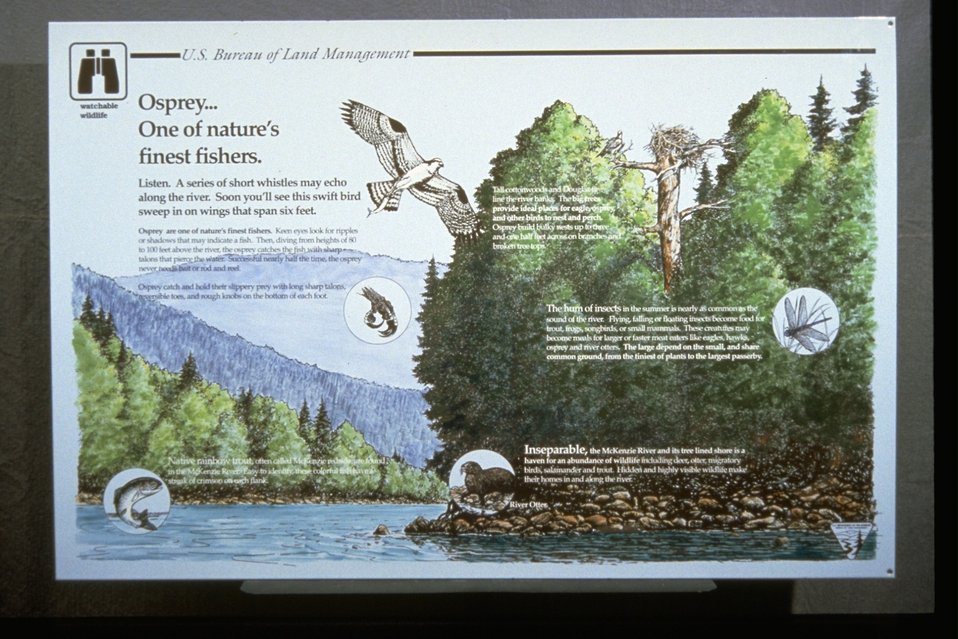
Close-up of interpretive panel near McKensie River.